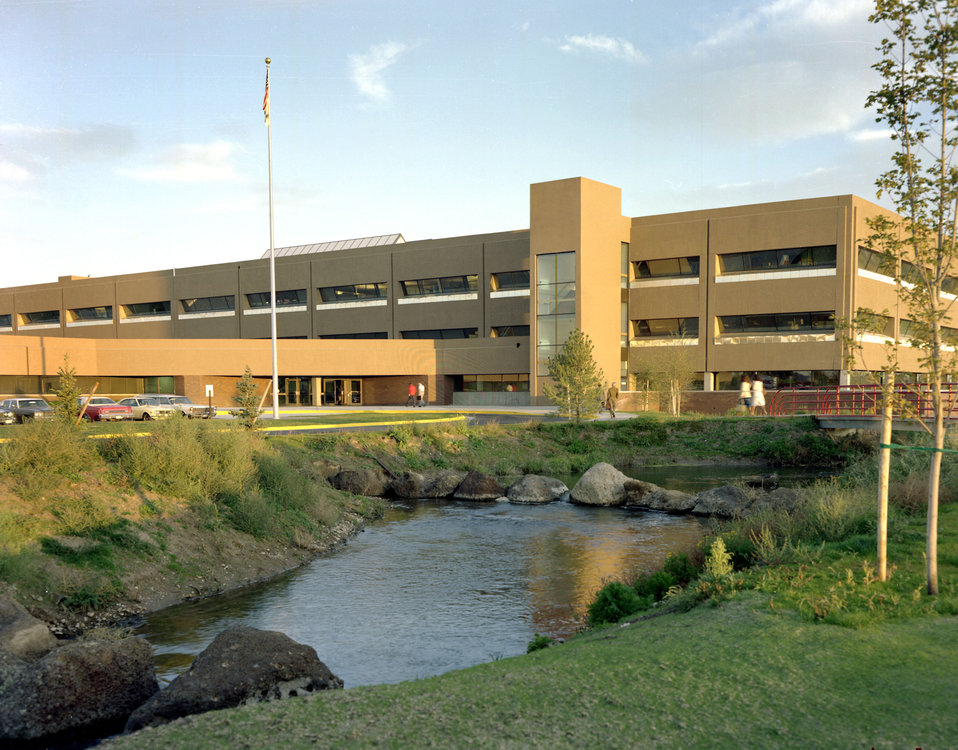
Idaho National Laboratory's Willow Creek Building is part of the lab's expanding research and education campus in Idaho Falls.